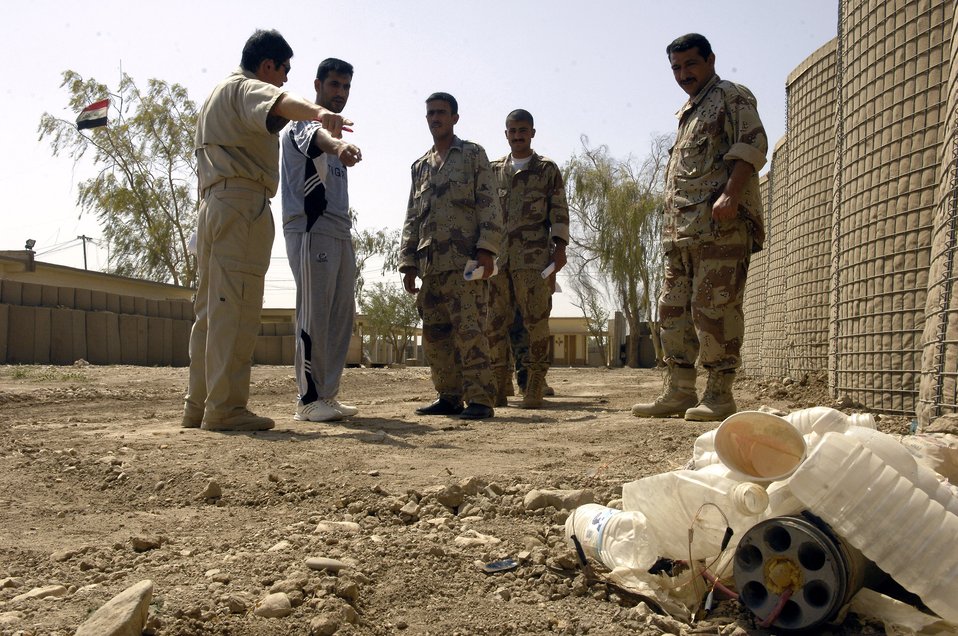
Airmen advise Iraqis on border security

Officers with the Iraqi department of border enforcement team walk an improvised explosive device identification lane with their instructors with the U.S. border enforcement transition team at Camp Echo, Iraq.